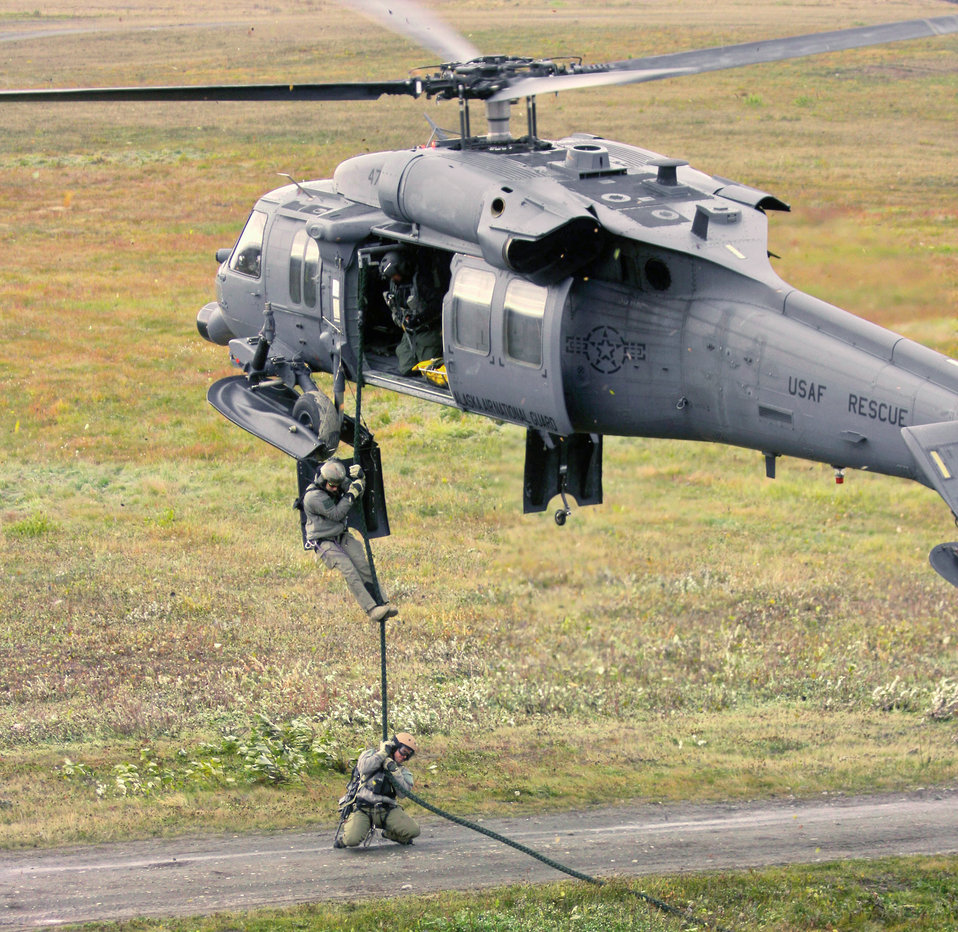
Alaska Air National Guard

A 210th Rescue Squadron HH-60 Pave Hawk helicopter hovers as pararescuemen from the 212th Rescue Squadron fast rope onto a scene during training June 30, 2010.